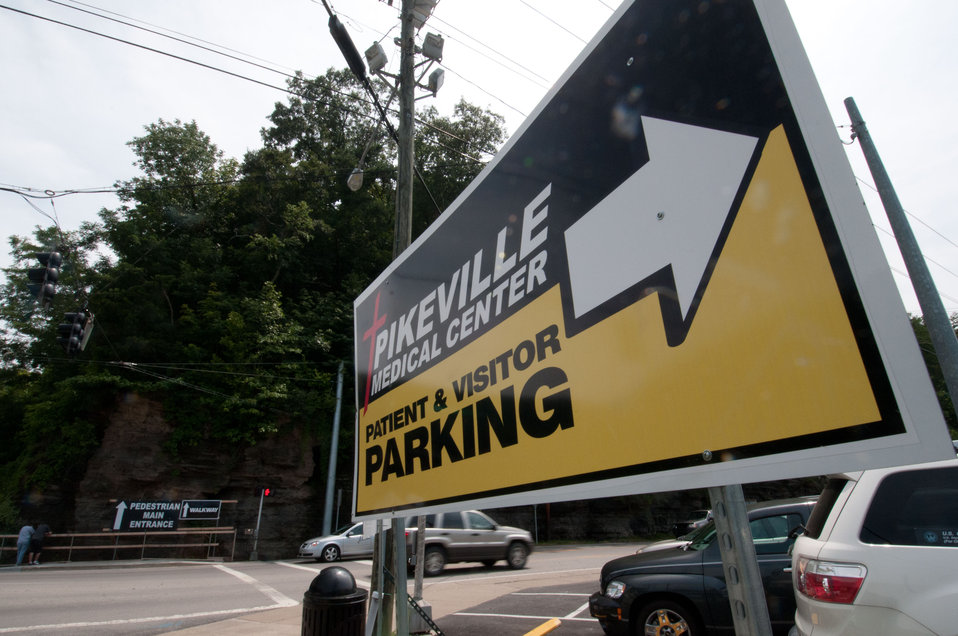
Detour, arrow, construction and temporary signs are posted on and across the re-utilized buildings and properties at various ends of multiple parking lots are common sights at the Pikeville Medical Center on Tuesday, July 12, 2011, in Pikeville, KY. Nearby, the above ground construction phase of Pikeville Medical Center (PMC) expansion project is underway, after months of infrastructure construction and rain delays. This is one of Kentucky’s largest American Recovery and Reinvestment Act (ARRA) projects. The $44.6 million Community Facilities Loan will finance construction of a new medical office building and parking garage.